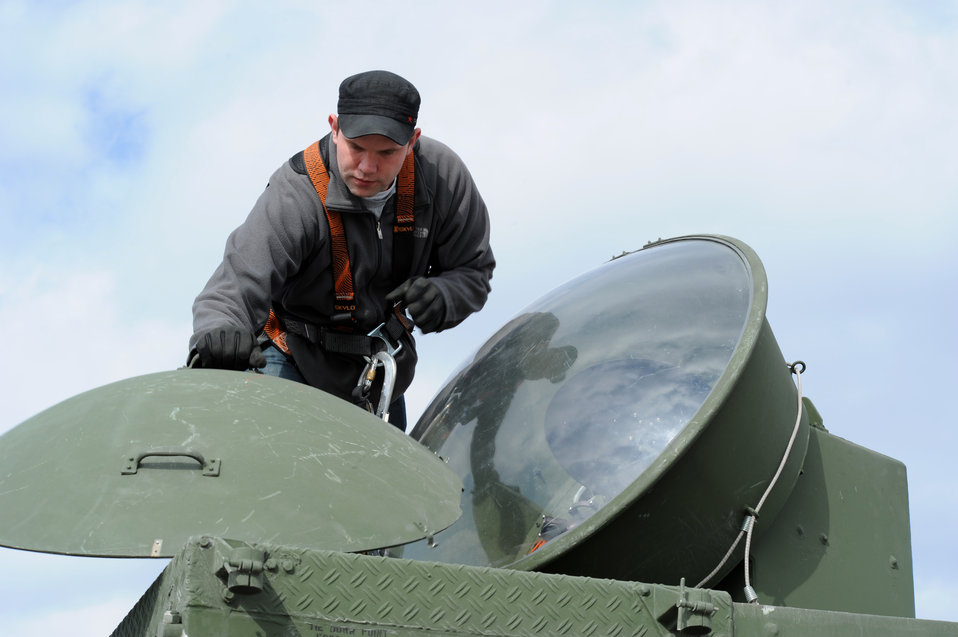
U.S. pilots plant SEAD with Turkish counterparts

Carl Gessman, a Polygone radar operator, removes the cover from a tactical radar threat generator during Anatolian Falcon 2012 in Konya, Turkey, March 8, 2012. Polygone is a multinational aircrew electronic warfare tactics facility located in Europe and was used to simulate pop-up ground threats throughout the exercise.